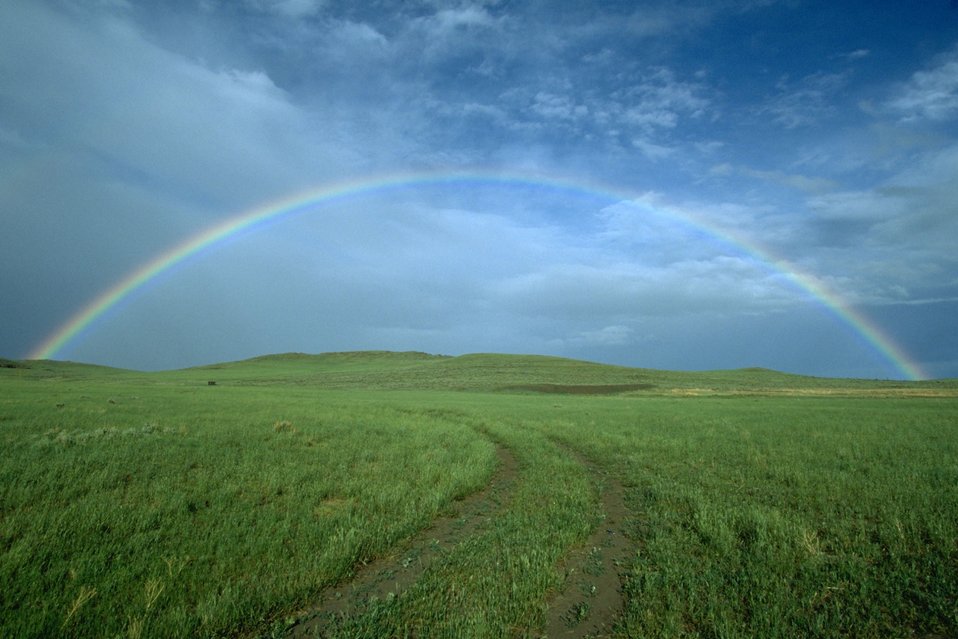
Two-track road leading to a beautiful rainbow